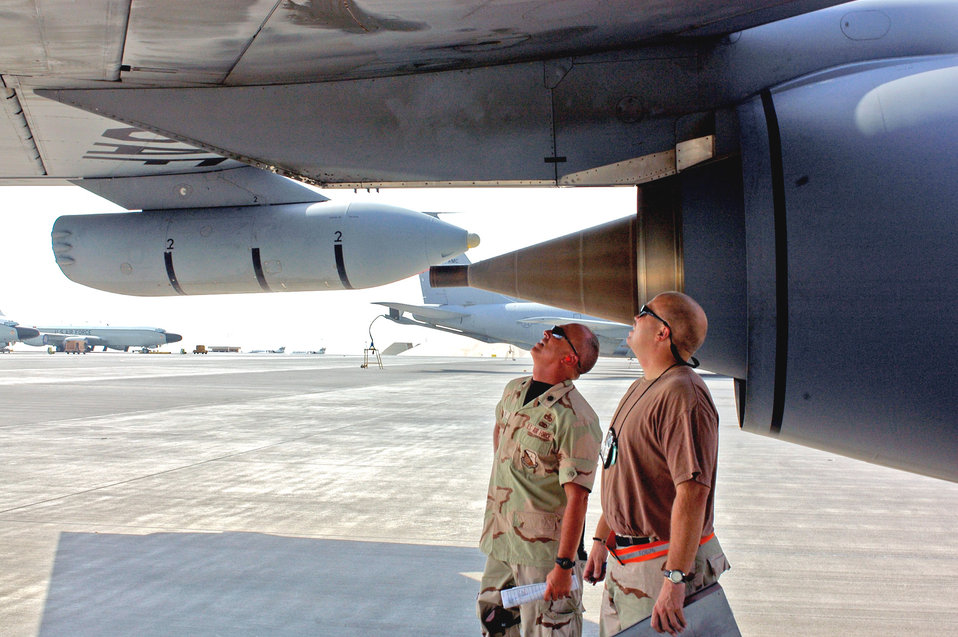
Deployed unit turns fuel into freedom

Lt. Col. Scott Fike (left) and Tech. Sgt. Kevin Kuehn analyze a hydraulic fluid leak on a KC-135 Stratotanker in Southwest Asia. The aircraft was venting to relieve pressure caused by excessive heat. Colonel Fike is the 379th Expeditonary Maintenance Group vice commander and Sergeant Kuehn is the 340th Aircraft Maintenance Unit specialist expeditor.